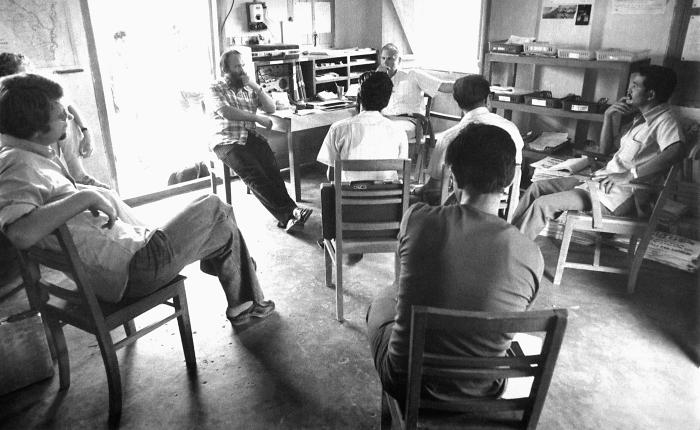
Seated at a desk in the background facing the meeting attendees was World Health Organization (WHO) Team Leader Dr. Pierre Claquin (Lt), and Epidemiologic Investigative Services (EIS) Team Leader Dr. Stanley O. Foster, as they were discussing strategies in combating the smallpox virus in order to achieve total eradication from the country of Bangladesh. Such meetings were held on a regular basis in order to communicate directives, as well as to receive data collected in the field.